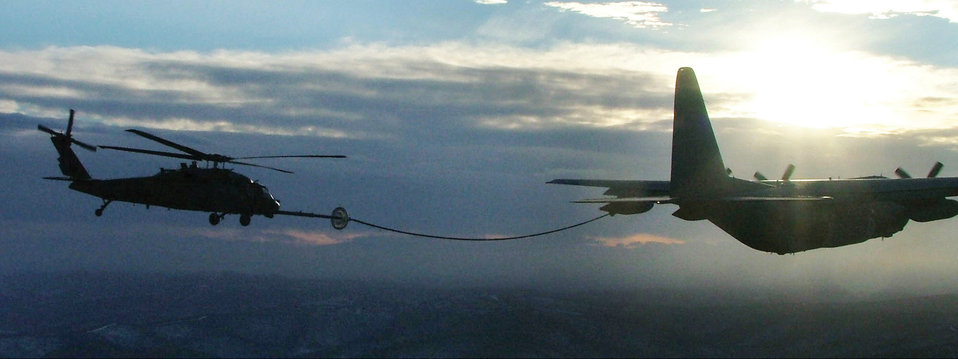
Cope Thunder 06-1

EIELSON AIR FORCE BASE, Alaska -- A HH-60 Pave Hawk refuel from a C-130 Hercules tanker after a simulated combat search and rescue mission over the Pacific Alaskan Range Complex during the Cope Thunder exercise. Cope Thunder, a two-week air and ground combat exercise involving more than 1,000 Airmen and Sailors and 87 aircraft that started Oct. 7, ended Oct. 20.